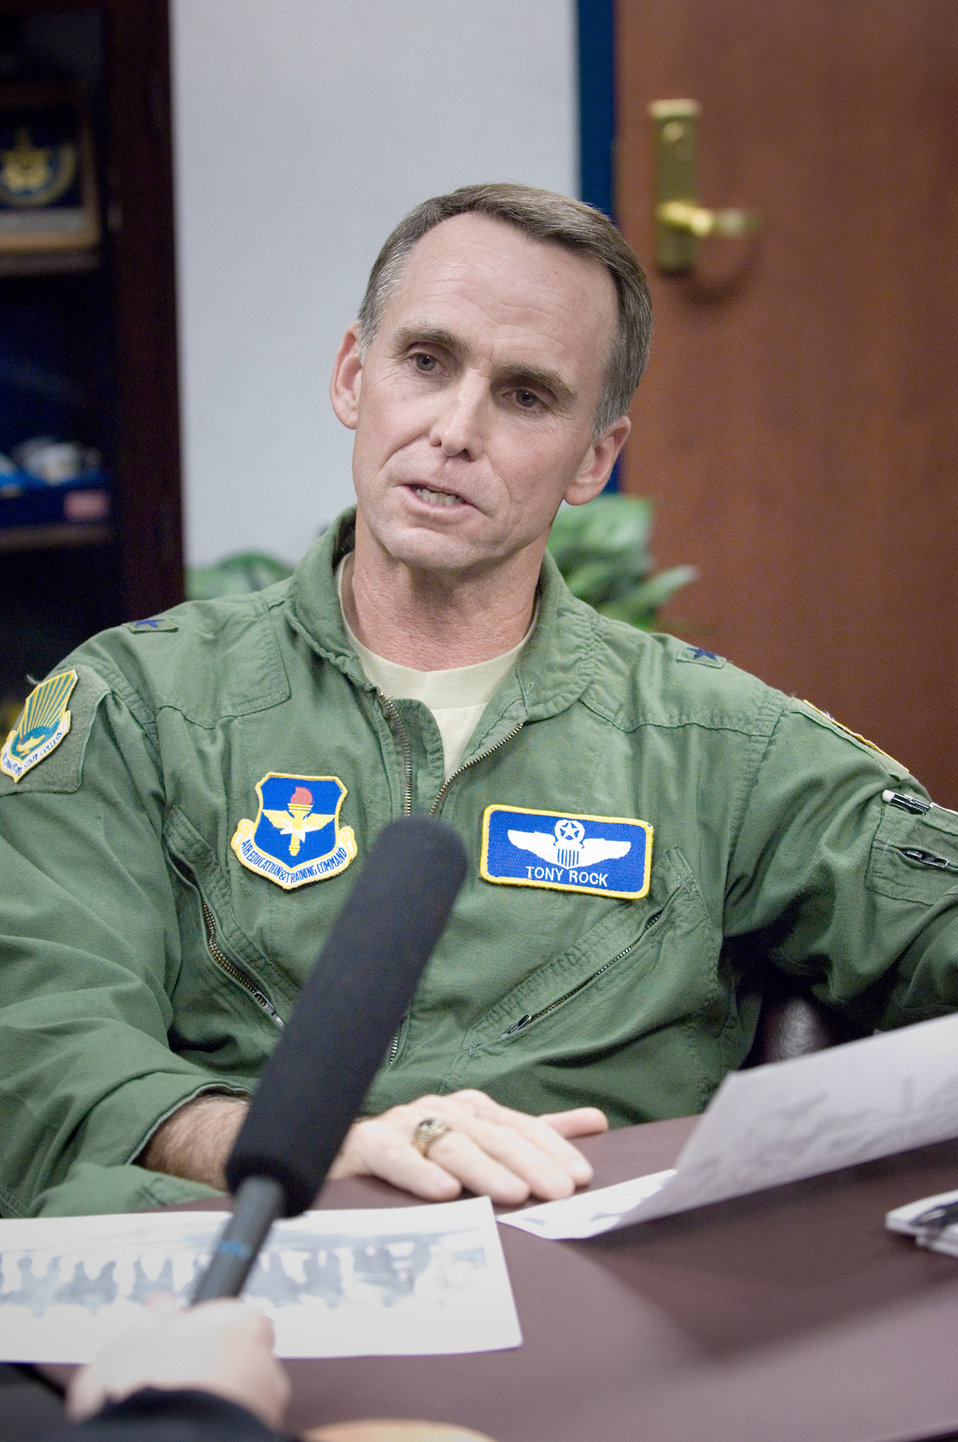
Brig Gen Rock Prepares for Command in Iraq

Brig. Gen. Anthony Rock answers questions from Alabama Public Radio reporter Ryan Vasquez about the general's culture and language preparations for his command in Iraq. General Rock spent a week in Iraq to familiarize himself with his new command following two weeks of intense Arabic language training. General Rock is a former commandant of Air Command and Staff College.